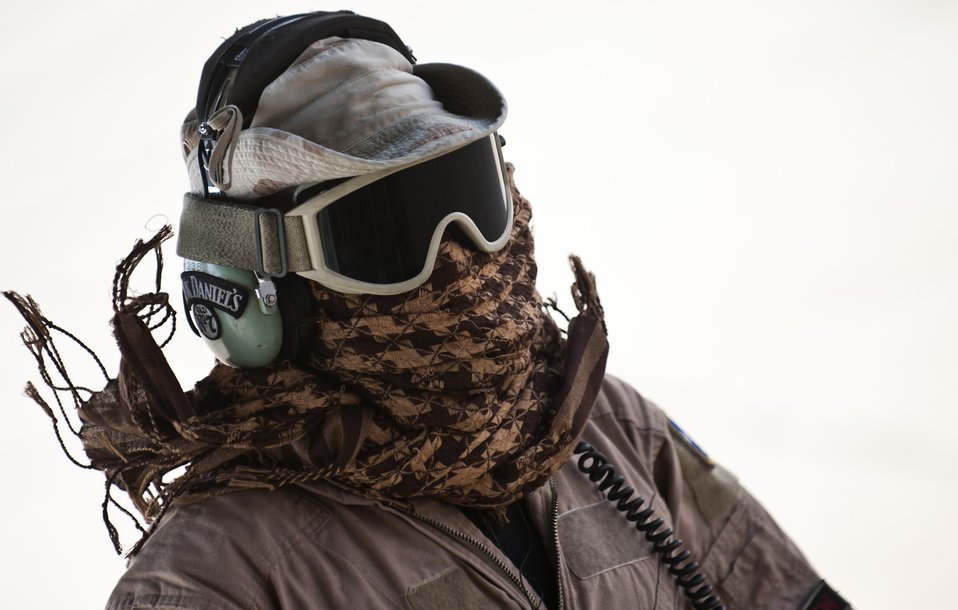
Wrapped up

Tech. Sgt. Andrew Briggs protects his head from the intense heat generated by the engines of a C-130 Hercules engine running during an aeromedical evacuation mission Sept. 7, 2011, at Al Asad Air Base, Iraq. Briggs is a loadmaster assigned to the 737th Expeditionary Airlift Squadron.